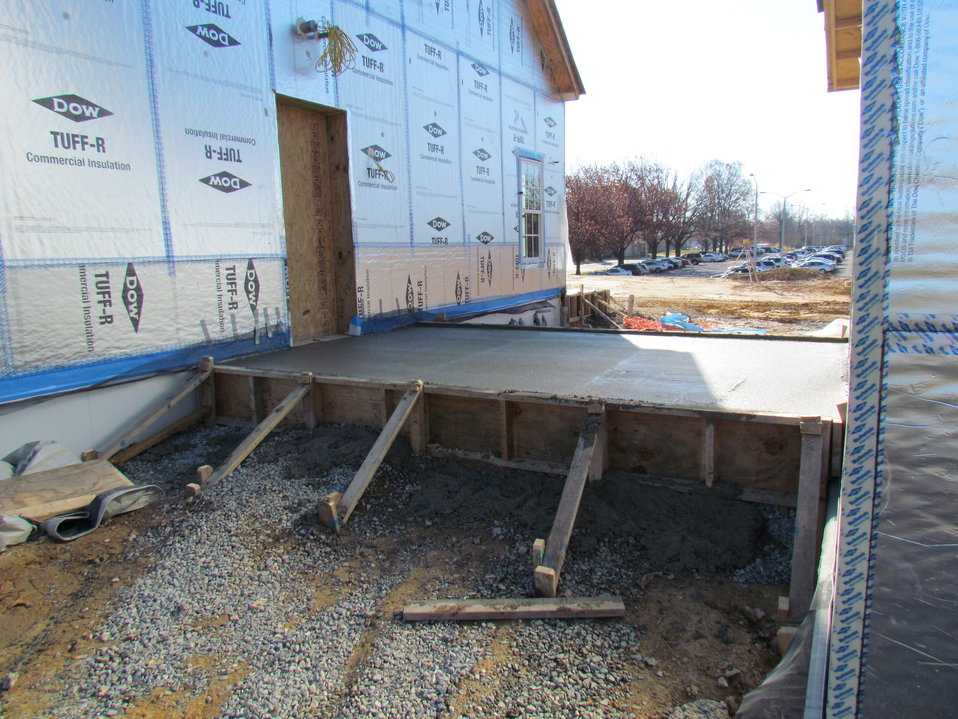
Net-Zero Energy Residential Test Facility - Photo showing concrete floor of breezeway connecting house to detached garage.